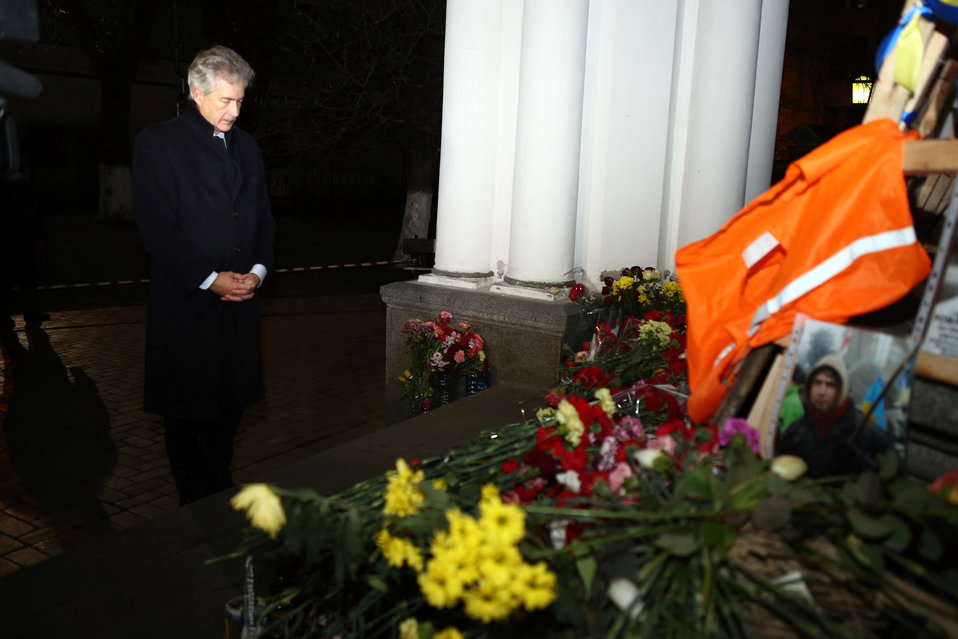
Deputy Secretary Burns Honors the Memory of Victims of the Tragic Events in Ukraine

Deputy Secretary of State Bill Burns honors the memory of the victims of the tragic events of last week in Kyiv, Ukraine, on February 25, 2014.